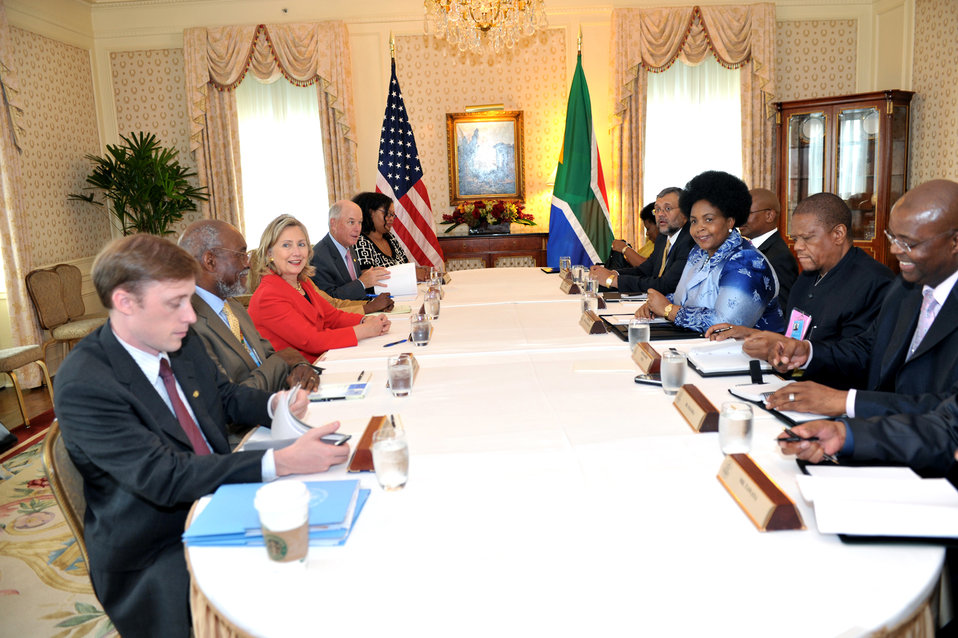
Secretary Clinton Holds a Bilateral With South African Foreign Minister Mashabane

U.S. Secretary of State Hillary Rodham Clinton holds a bilateral meeting with South African Foreign Minister Mashabane, at the Waldorf-Astoria in New York, New York, on September 22, 2010.